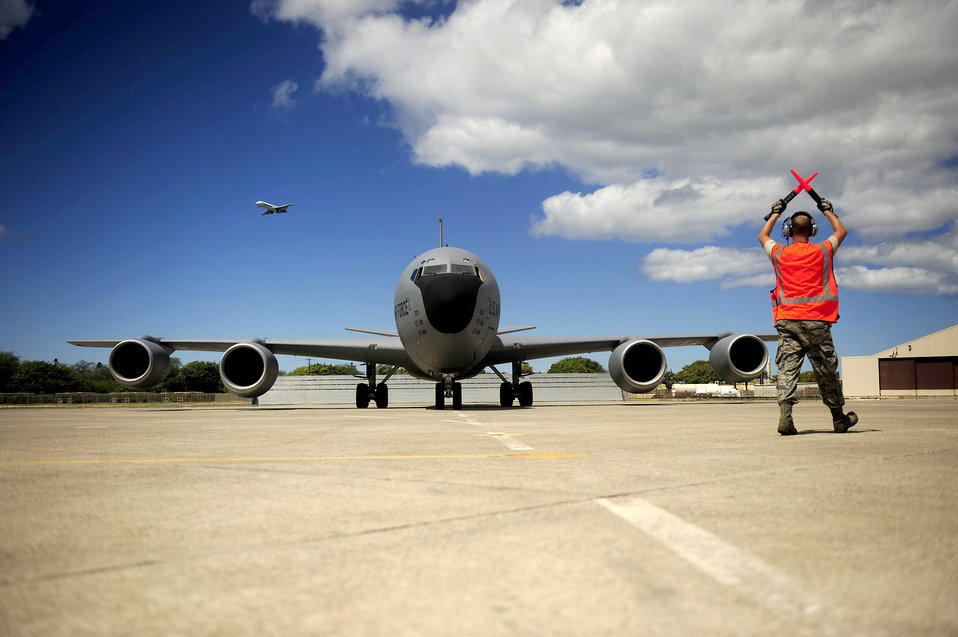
Stop there

Tech. Sgt. Timothy Milliken marshalls in a KC-135 Stratotanker after a refueling mission July 15, 2010, during exercise Rim of the Pacific at Hickam Force Base, Hawaii. Sergeant Milliken is a crew chief assigned to the 507th Aircraft Maintenance Squadron at Tinker AFB, Okla.